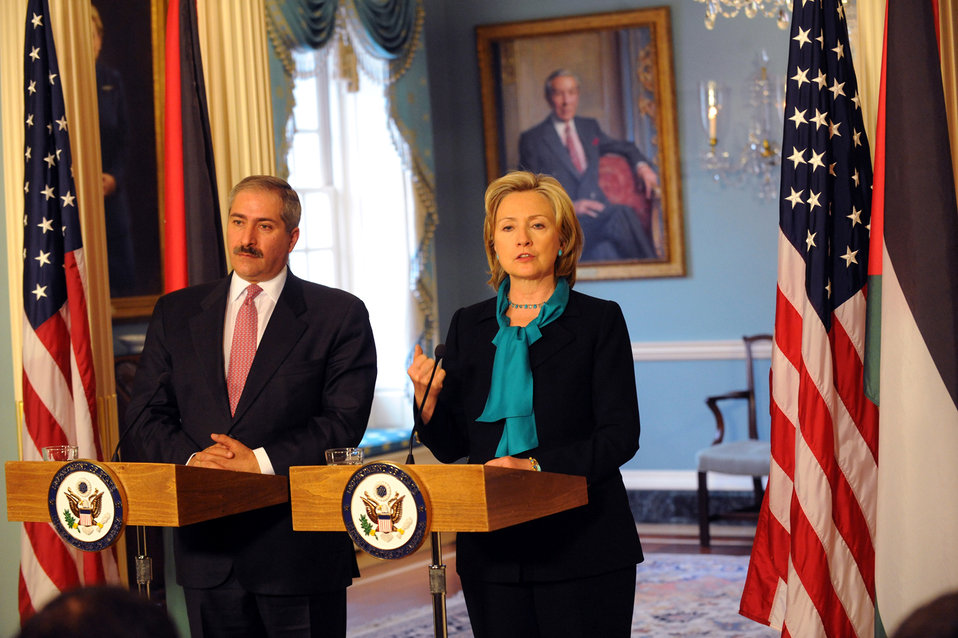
Secretary Clinton Meets With Jordanian Foreign Minister

U.S. Secretary of State Hillary Rodham Clinton holds a bilateral meeting with His Excellency Nasser Judeh, Foreign Minister of Jordan, at the Department of State in Washington, DC January 8, 2010.